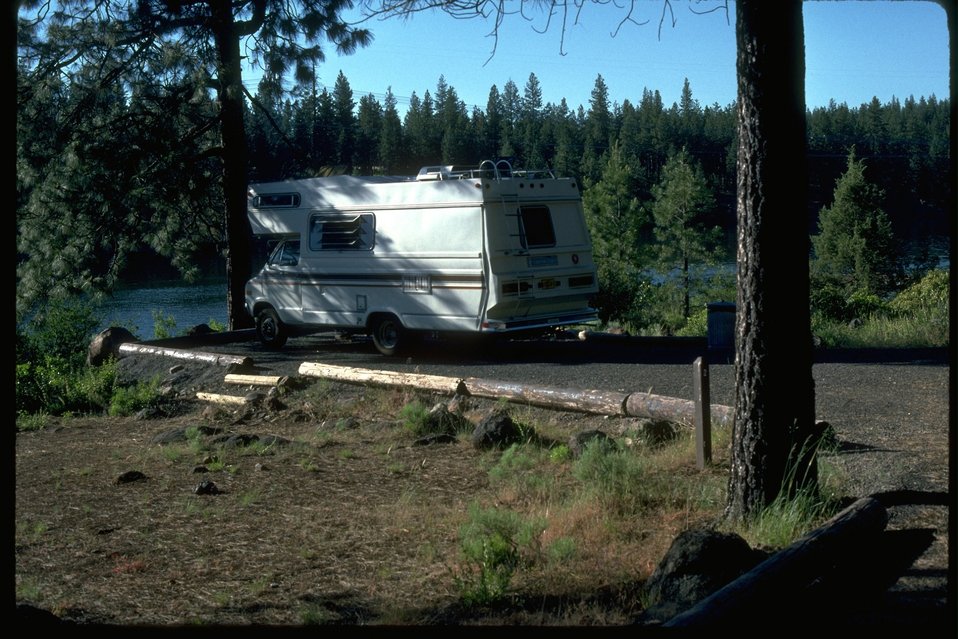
Topsy Reservoir camp site.